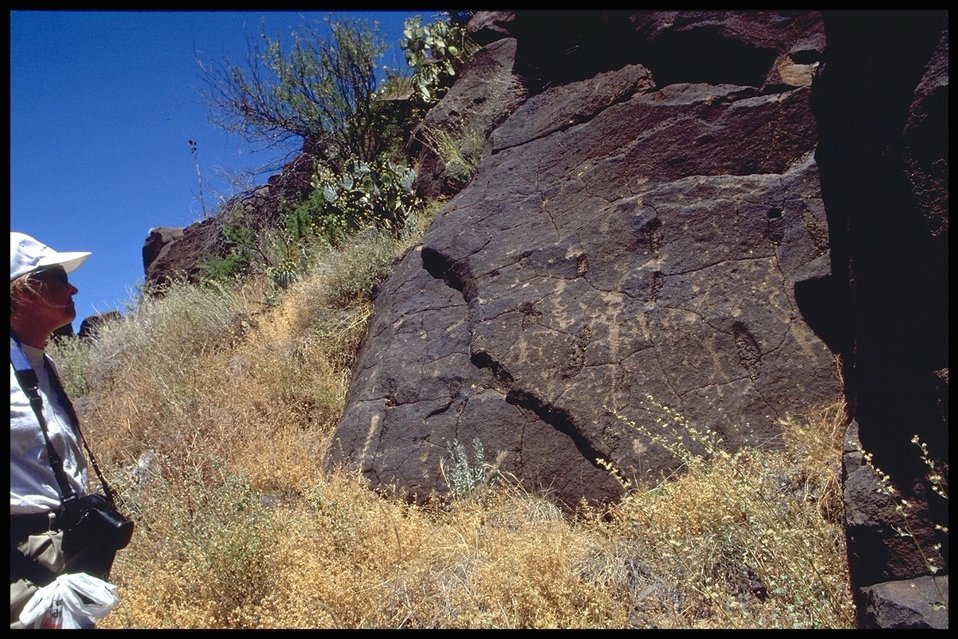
Petroglphs (Rock Art) can be found throughout the 71,000 Acres that make up the Agua Fria National Monument.